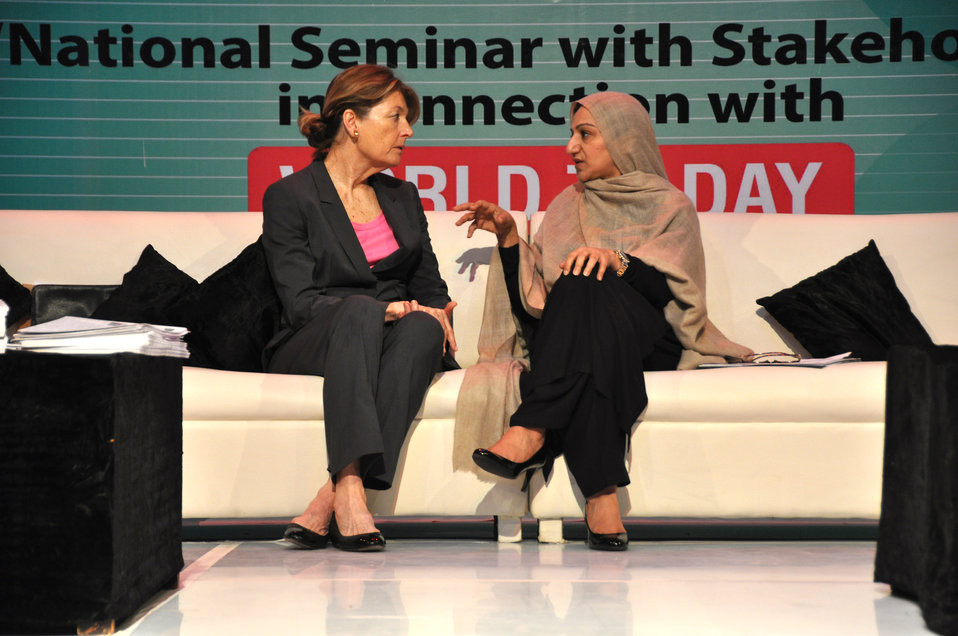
During a quiet moment between speakers, Nancy Estes, Acting Mission Director USAID, has a private conversation with Minister of State, National Health Services, Mrs. Saira Afzal Tarar.